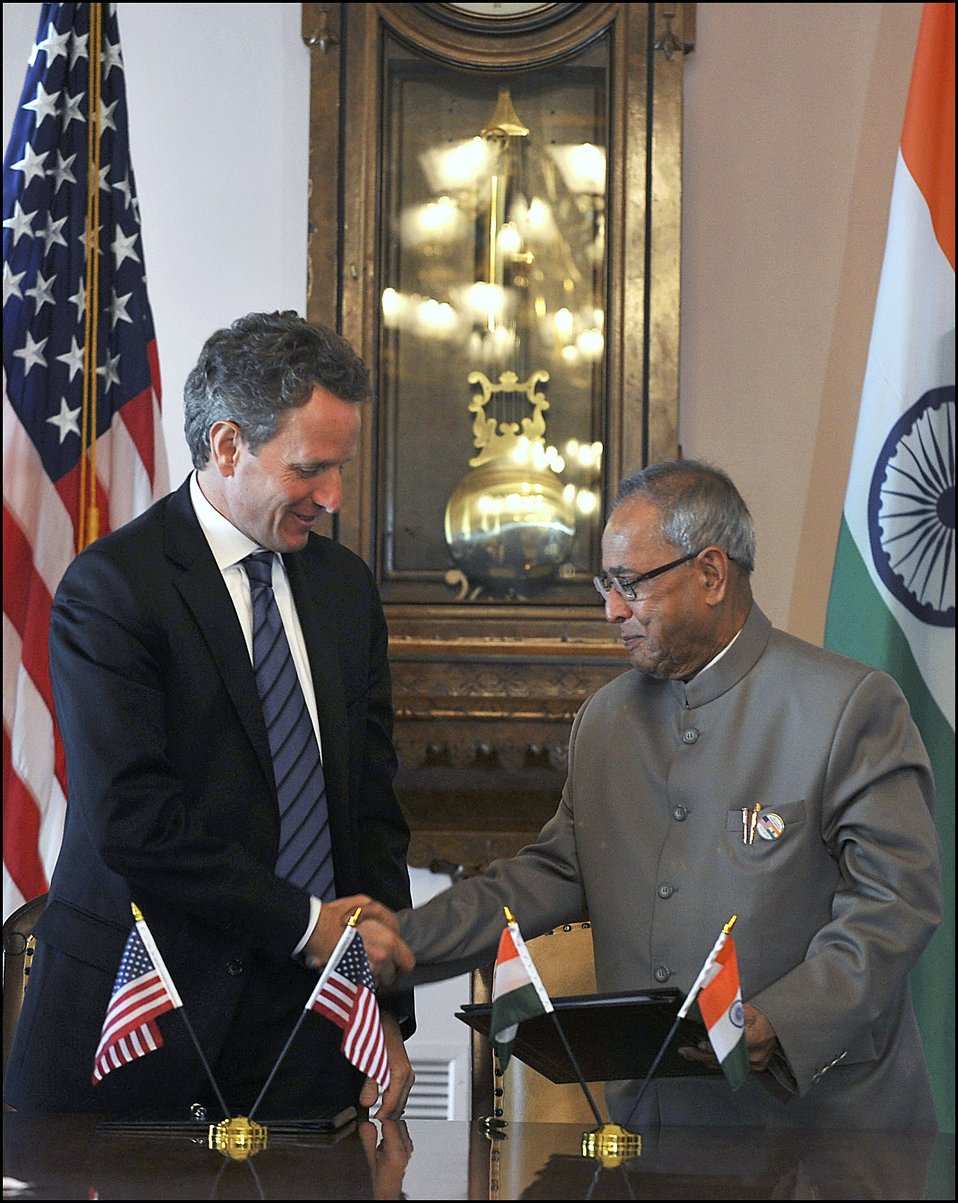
2011 U.S.-India Partnership

Secretary of the Treasury Tim Geithner and Indian Finance Minister Pranab Mukherjee convened in Washington, D.C. on June 28, 2011 for the second ministerial meeting of the U.S.-India Economic and Financial Partnership.